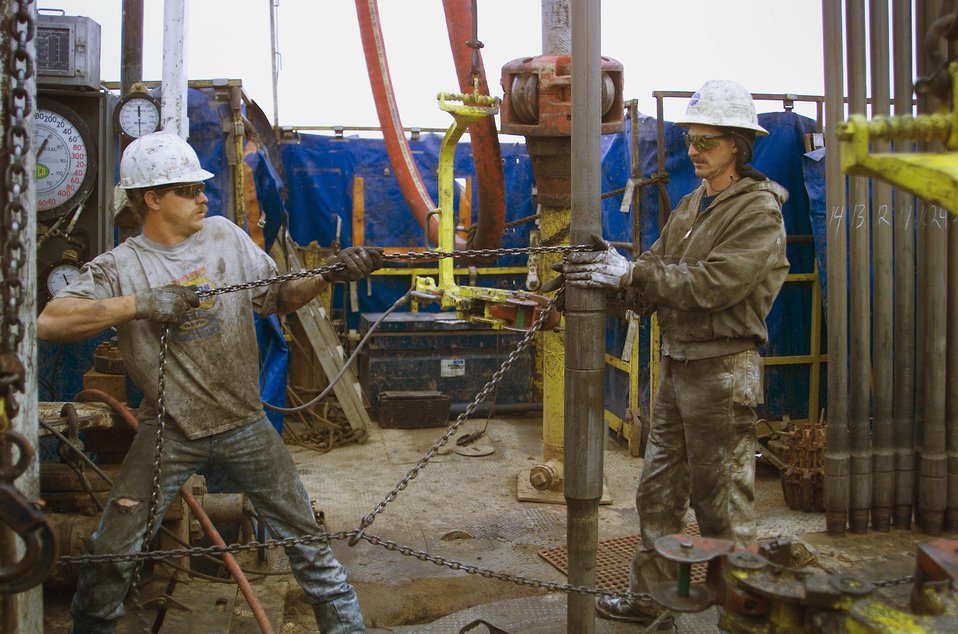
The drilling crew works on a RMOTC rig at Naval Petroleum Reserve No.3 (NPR-3) near Casper, Wyoming.

The Rocky Mountain Oilfield Testing Center (RMOTC) is a Department of Energy field test site for emerging and developing technologies to address critical energy issues. The field test site, located on Naval Petroleum Reserves No.3 (NPR-3), is a 10,000-acre site. There are approximately 700 well bores with 600 producing wells ranging in depth from 500 to 5,000 feet.